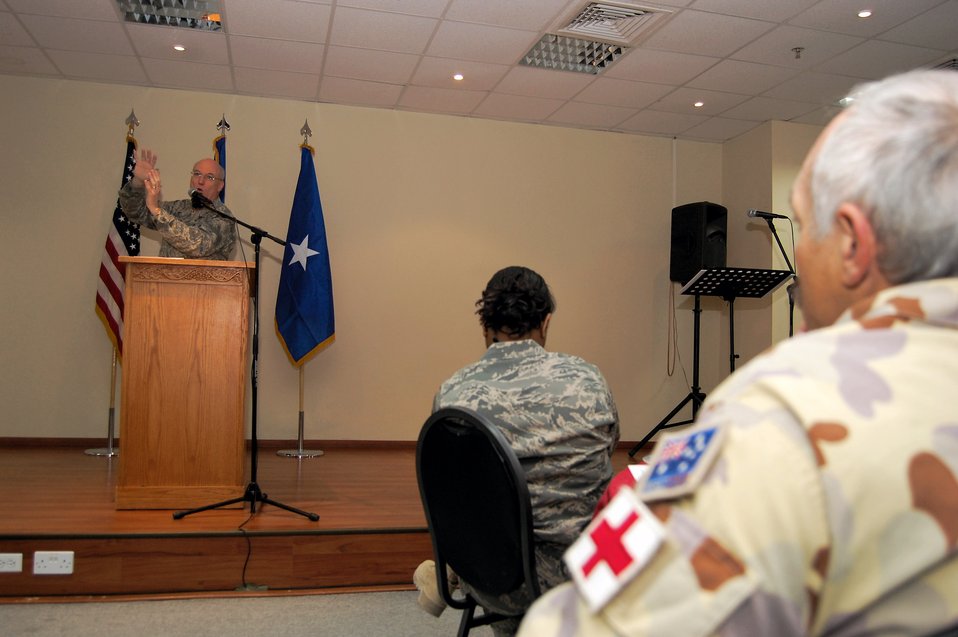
Chaplain brings spiritual message to deployed Airmen

Chaplain (Brig. Gen.) Cecil R. Richardson speaks to more than 150 U.S. and coalition forces at the 386th Air Expeditionary Wing Chapel during the National Prayer Breakfast March 18 at a Southwest Asia air base. The Air Force deputy chief of chaplains was the guest speaker for the breakfast and took time to visit with Airmen at their work centers during a tour of the base.